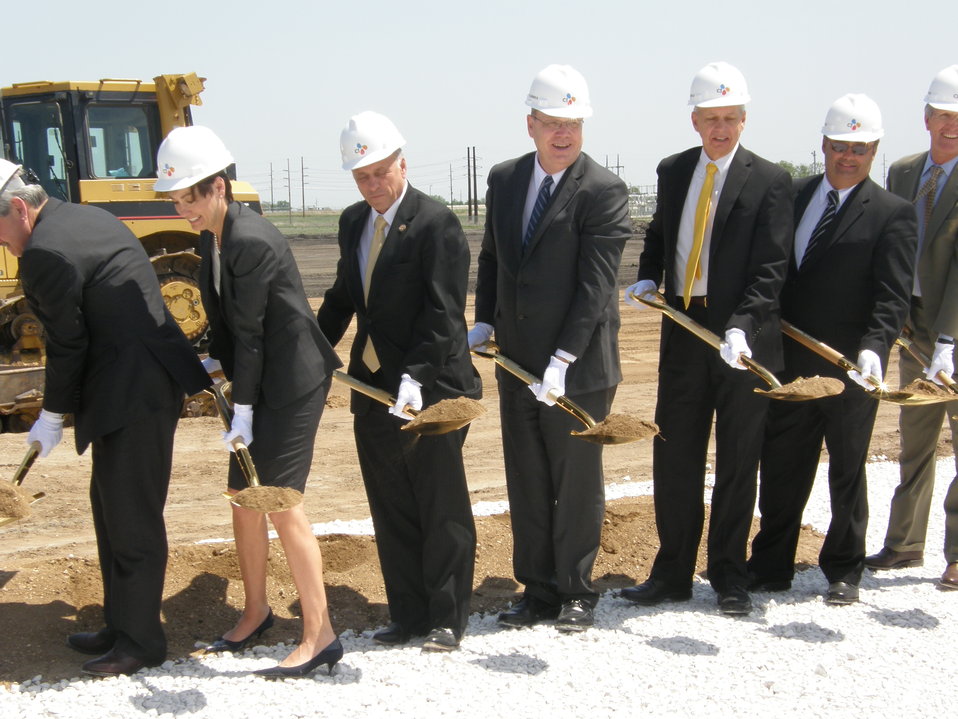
Agriculture Under Secretary for Rural Development Dallas Tonsanger (fourth from left), participated in groundbreaking ceremonies for the CJ Bio America's $320 million lysine production facility, in Fort Dodge, Iowa, on Monday, May 14, 2012. When operational in 2014 the plant will create more than 170 jobs and produce more than 100,000 metric tons of amino acids for animal feed additives.